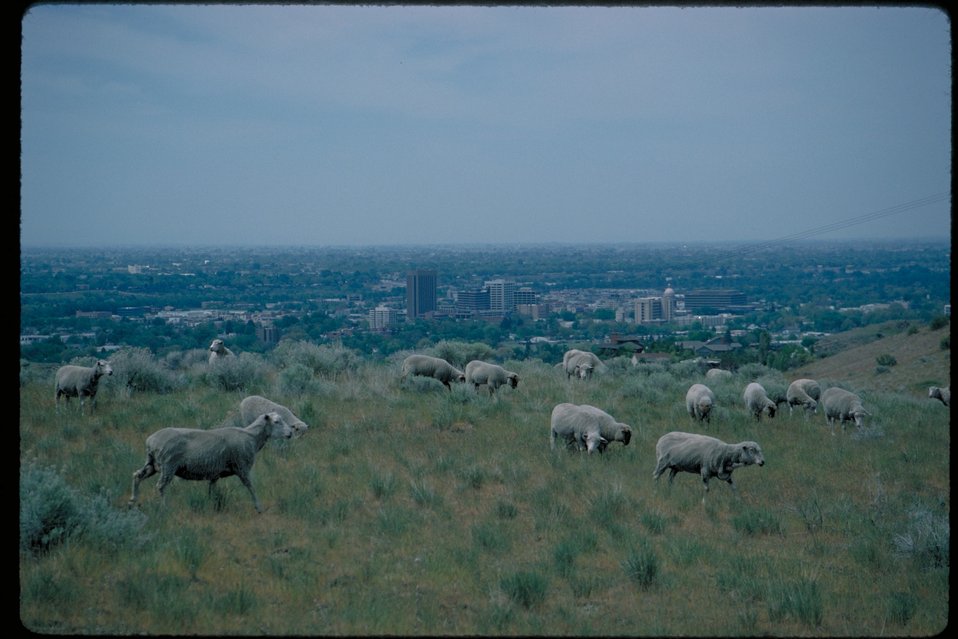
Goats grazing on Boise Front Four Rivers Field Office LSRD Lower Snake River District